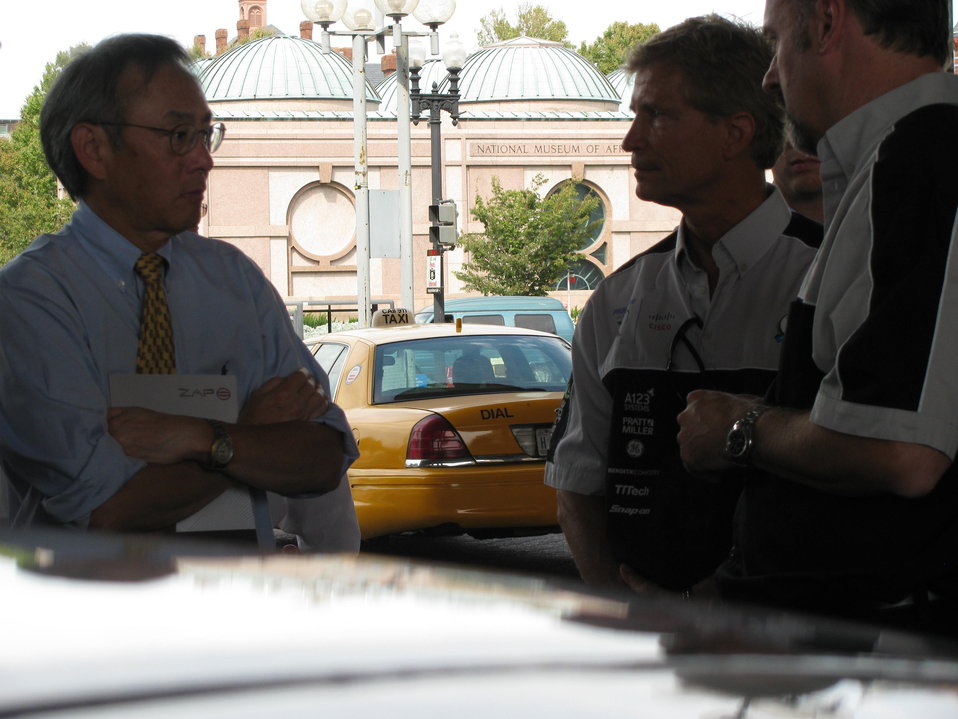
X Prize 058